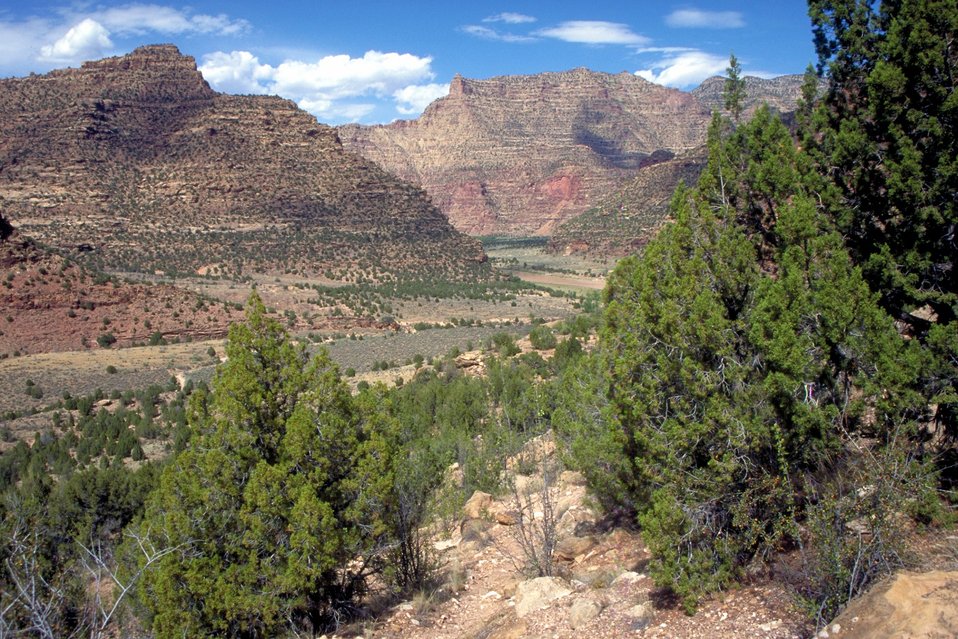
Desolation/Gray Canyons near Price, Utah.